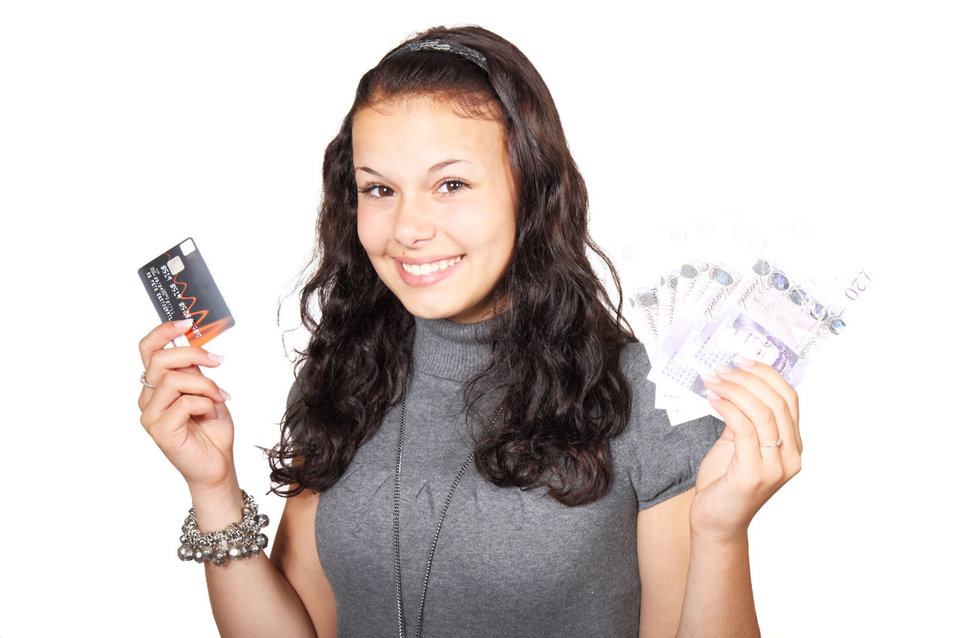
Woman credit card and money

Young woman with credit card and money in both hands.